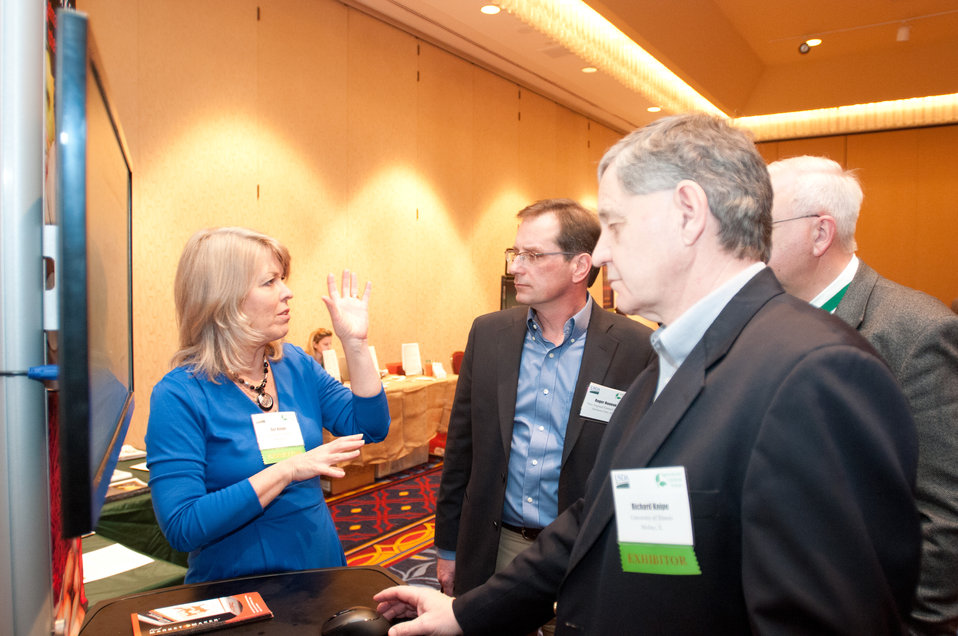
2013 Agricultural Outlook Forum, held at the Crystal Gateway Marriott Hotel, Arlington, Virginia on Thursday, Feb. 21, 2013. This annual Forum brings together producers, policymakers, and business, government, and industry leaders to meet, exchange ideas, and discuss timely agriculture issues.